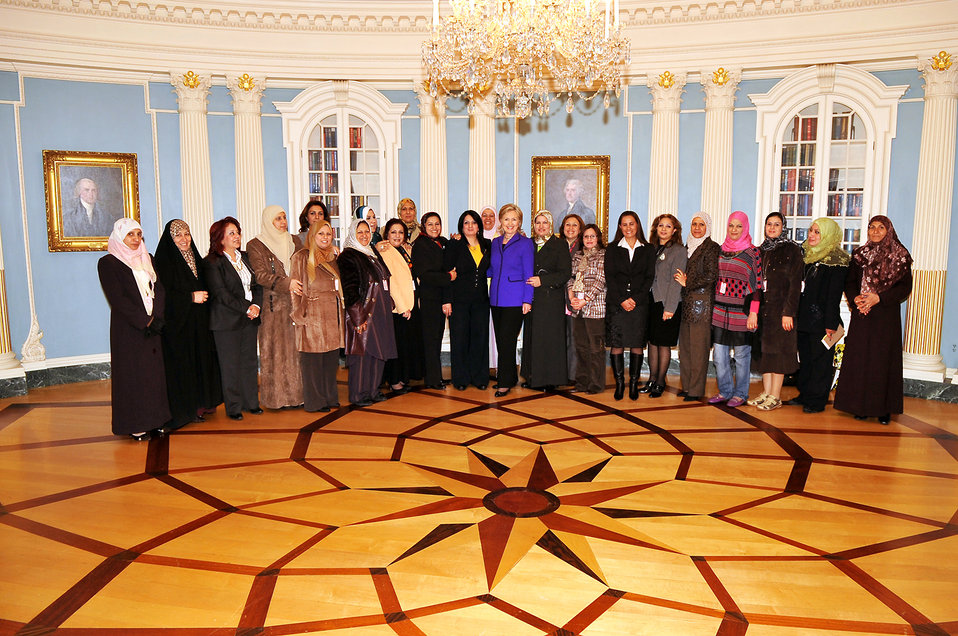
Secretary Clinton Meets With Iraqi Women Leaders

U.S. Secretary of State Hillary Rodham Clinton meets with twenty-two Iraqi Women Provincial Council Leaders at the U.S. Department of State in Washington, DC March 16, 2010.